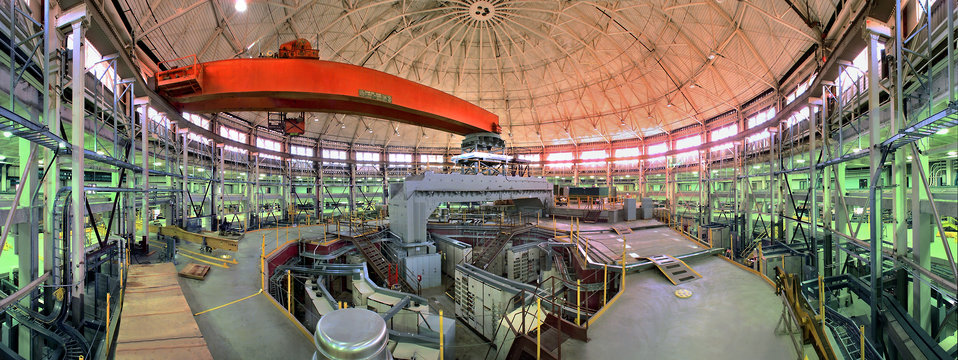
THE ADVANCED LIGHT SOURCE (ALS), A DIVISION OF LAWRENCE BERKELEY NATIONAL LABORATORY, IS A NATIONAL USER FACILITY THAT GENERATES INTENSE LIGHT FOR SCIENTIFIC AND TECHNOLOGICAL RESEARCH.

As one of the World's brightest sources of ultraviolet and soft x-rays beams and the world's first third generation synchrotron light source in the energy range- the ALS makes previously impossible studies possible.